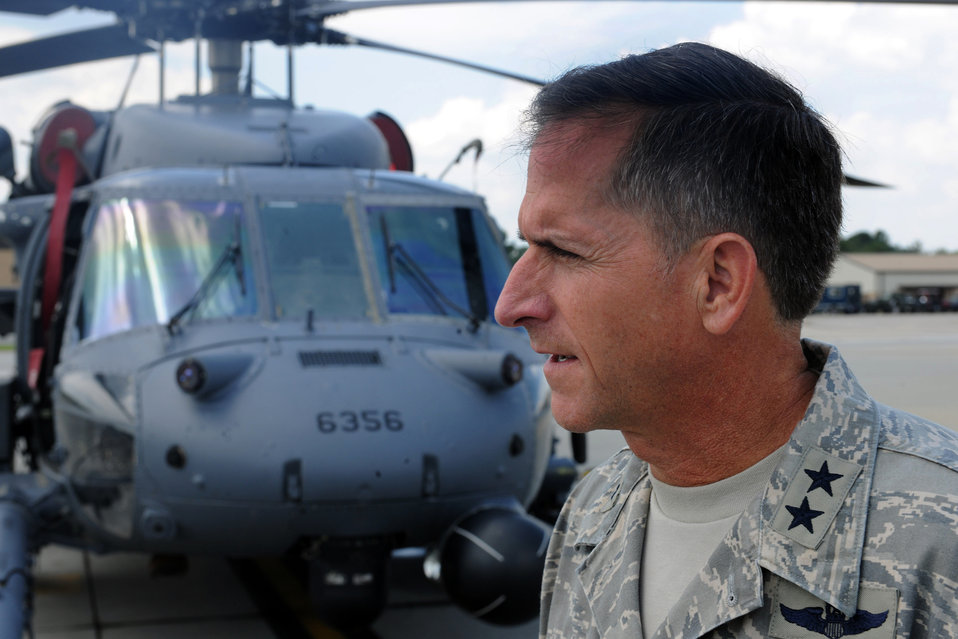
A close call to remember

Maj. Gen. David Goldfein stands in front of an HH-60G Pave Hawk during his visit to Moody Air Force Base, Ga., Sept. 1, 2010. During his recent visit, General Goldfein was able to reunite with Lt. Col. Tom Kunkel, the HH-60G pilot who rescued him when his aircraft was shot down over Serbia. General Goldfein is the Air Combat Command director of air and space operations. Colonel Kunkel is the 41st Rescue Squadron commander.